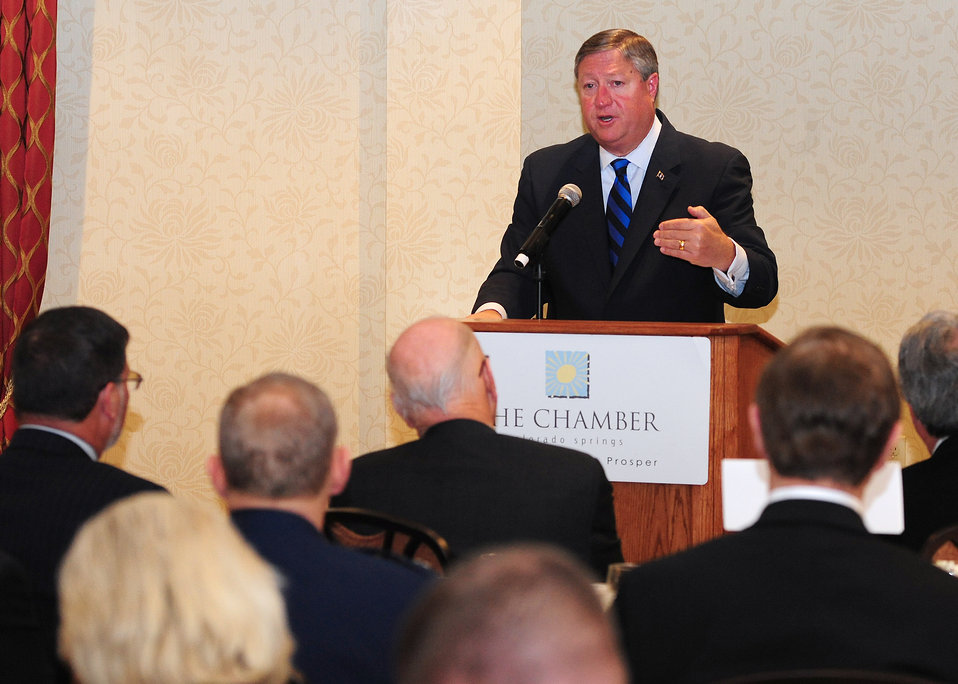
Donley talks budget priorities

Secretary of the Air Force Michael Donley addresses the Defense
Department's budget priorities before an audience of community, military and
business leaders in Colorado Springs, Colo., Jan. 27, 2012. Donley was in
Colorado to welcome President Obama to Buckley Air Force Base, near Aurora,
Colo., on Jan. 26, 2012. The secretary said that the Defense Department
would strive to retain the gains made in joint operations over the last 10
years of war in Iraq and Afghanistan while the overall force becomes leaner,
smaller and more agile.